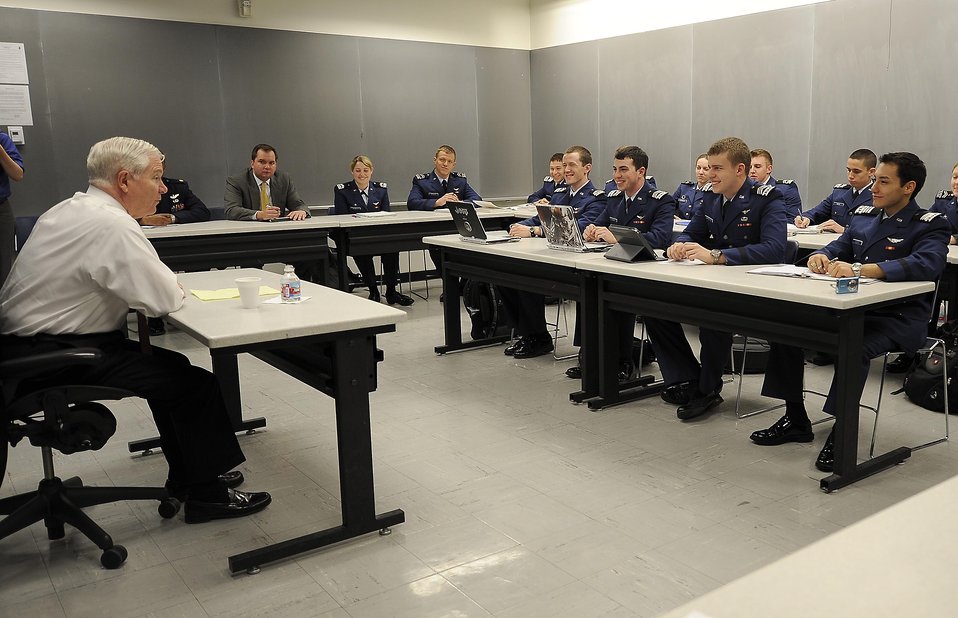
Gates urges new Air Force leaders to think creatively

Defense Secretary Robert M. Gates talks with Air Force Academy cadets March 4, 2011, while teaching a national security class as part of the Capstone Seminar at the Air Force Academy in Colorado Springs, Colo.